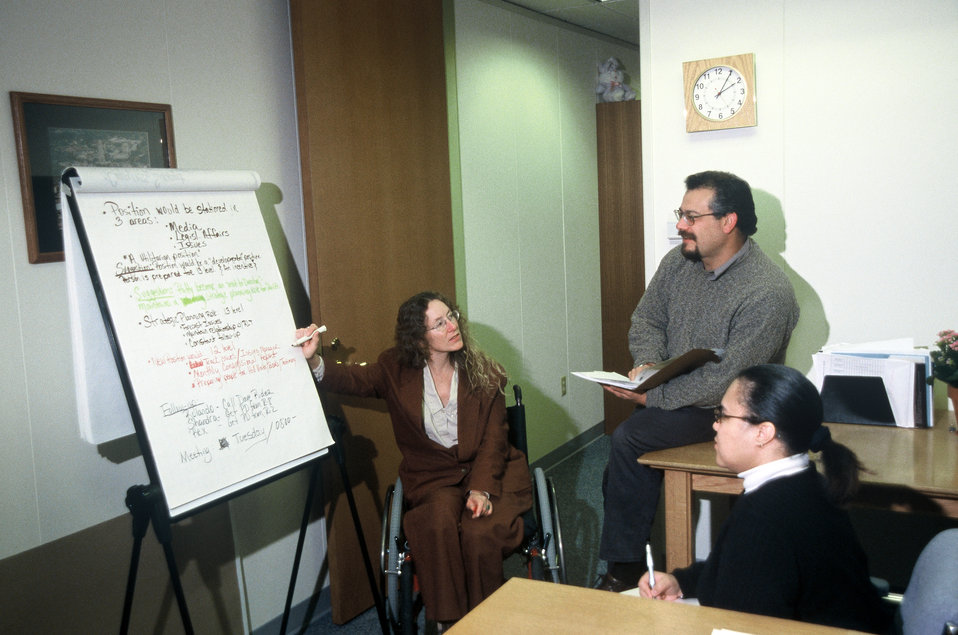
U.S. Forest Service (FS) employee conducts a meeting at the FS Paciffic Northwest Region 6 office headquarters in Portland, OR in October 1996.